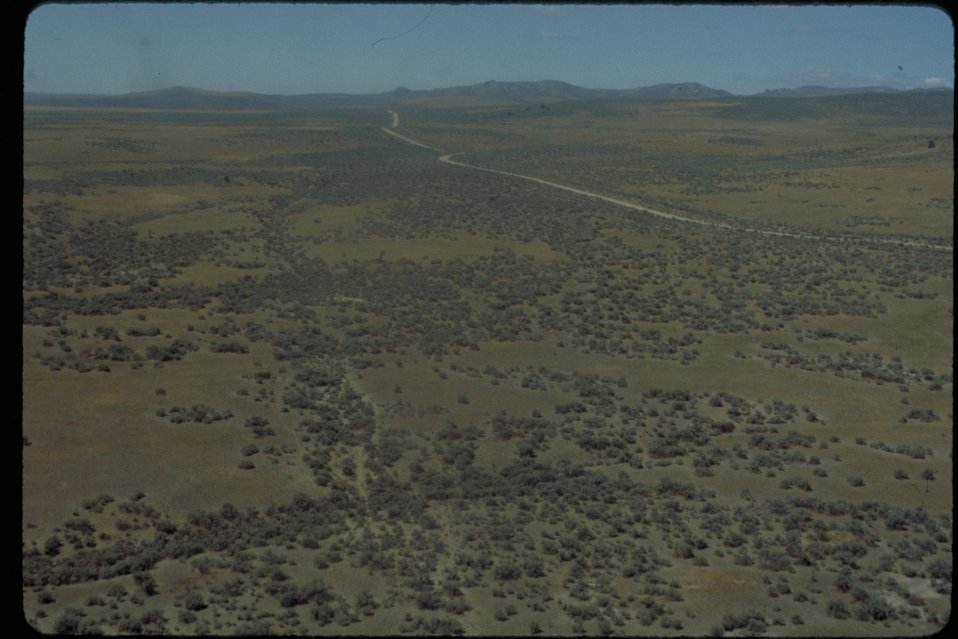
Oregon Trail North of Mountain Home Lower Snake River District